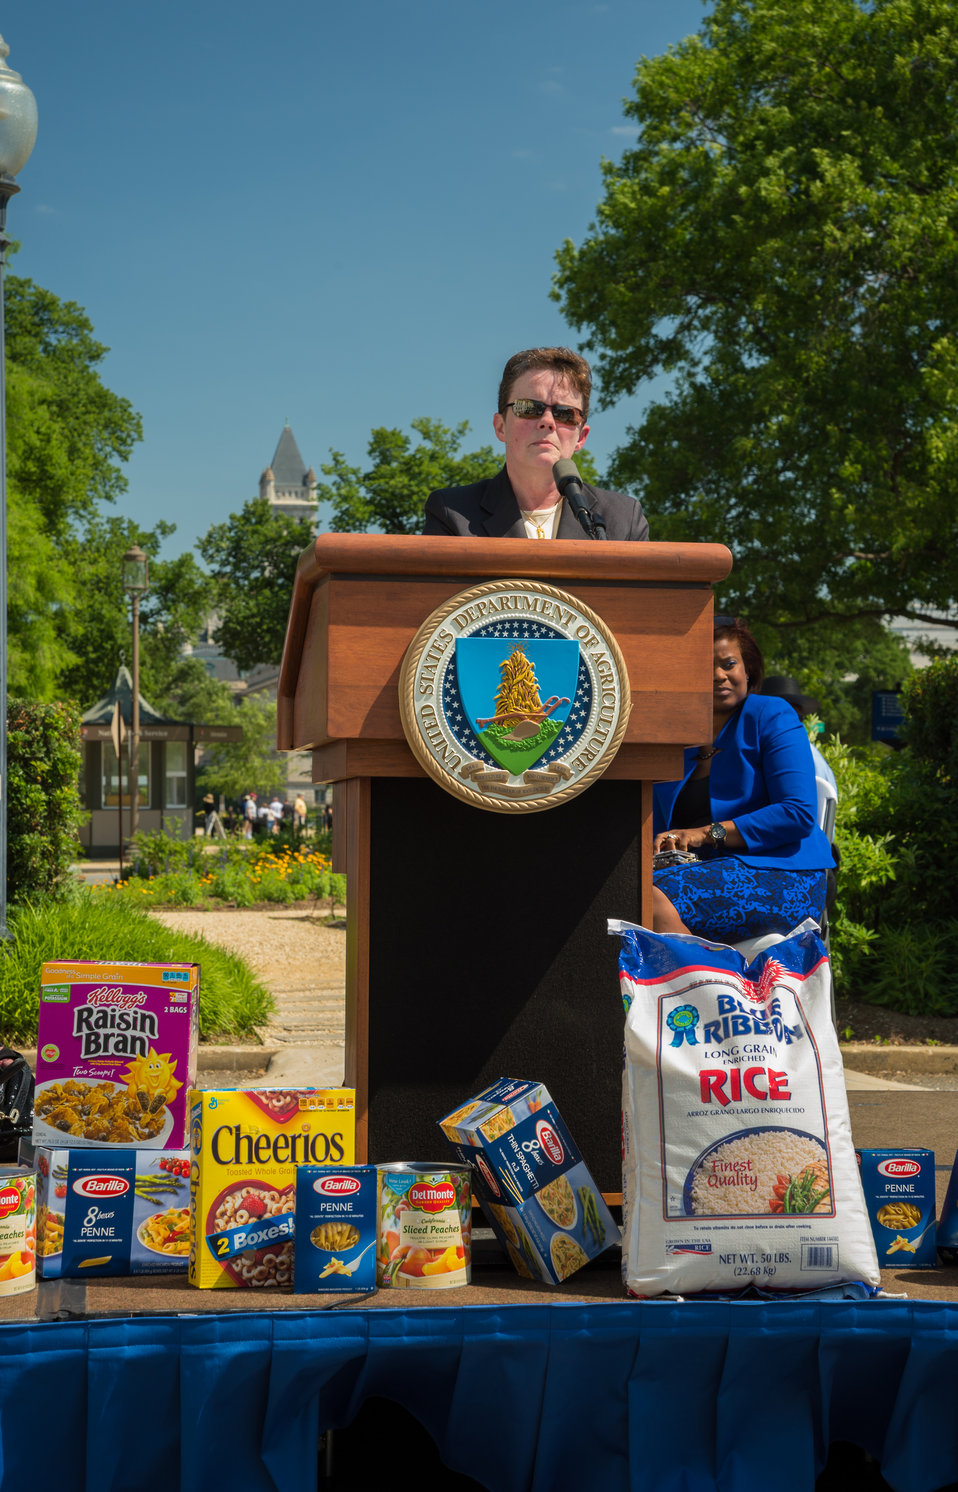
Pamela Mitchell, Deputy Chief Human Capital Officer, Department of Defense (DOD) accepted the challenge of friendly competition during the 2014 National Feds Feed Families Kick-Off at the United States Department of Agriculture’s (USDA’s) People’s Garden in Washington, DC, Mon. Jun. 2, 2014. The theme of this year’s event is, “Help Knock Out Hunger.” The USDA will lead the campaign with the support of the Chief Human Capital Officers Council and other agency partners, which officially begins on June 1 and will run through August 27, 2014.